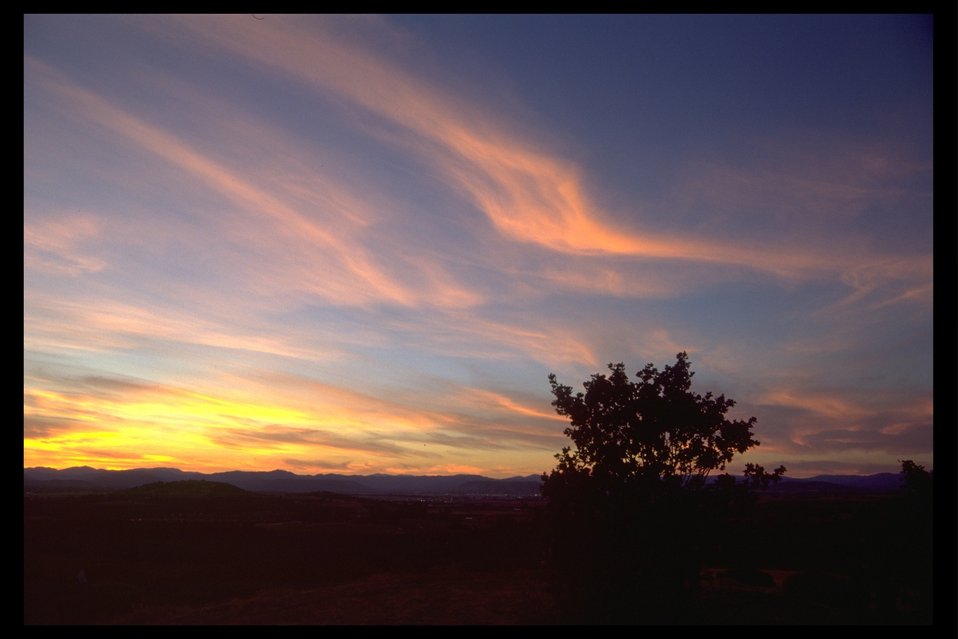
Sunset from Roxy Anne Peak.